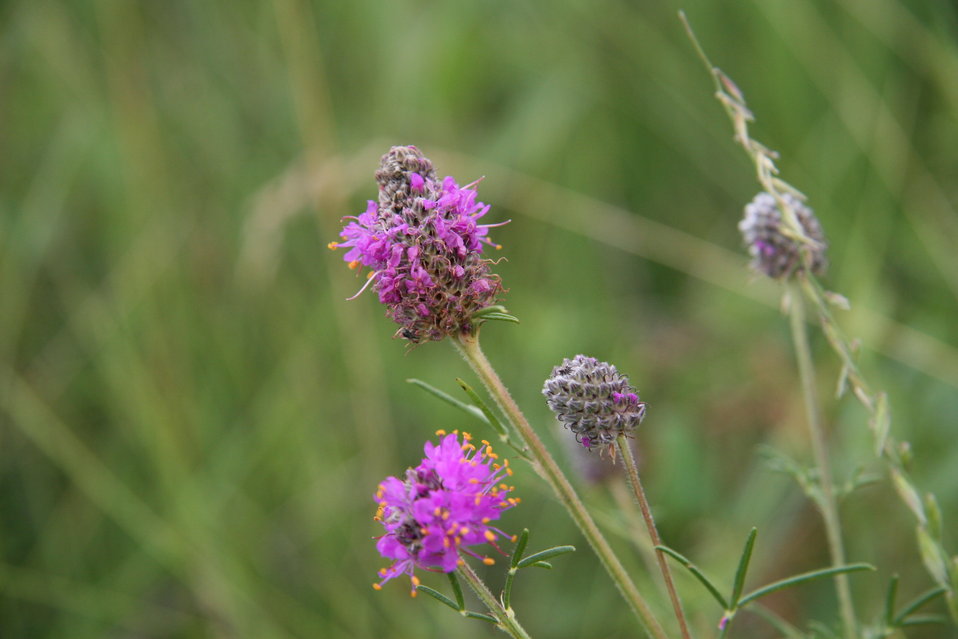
Purple prairie clover seen on a Wildflower Walk held on Munch's Coulee National Recreation Hiking Trail at Des Lacs National Wildlife Refuge in North Dakota.